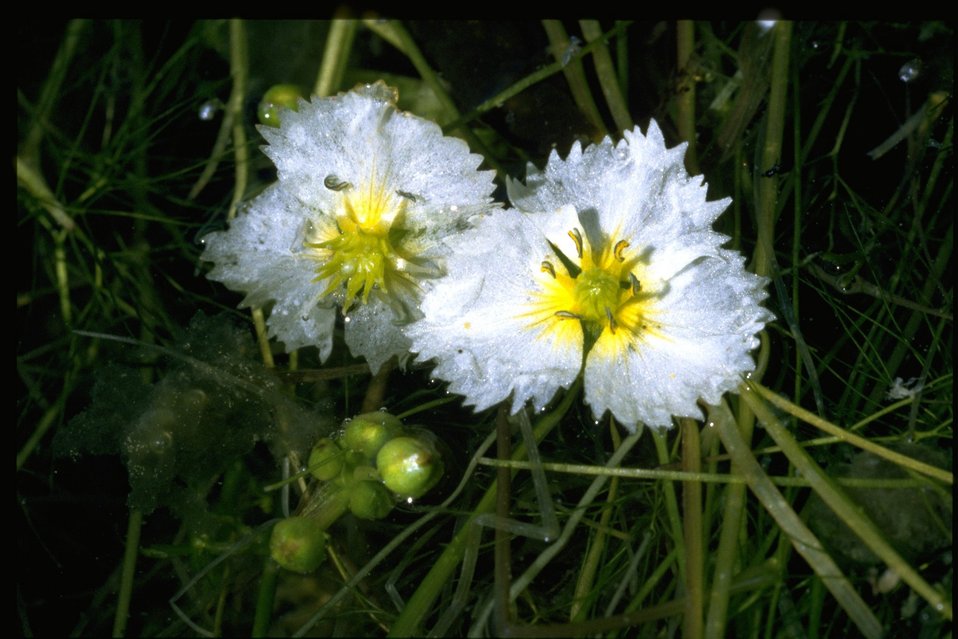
Medium shot of Fringed Water Plantain.